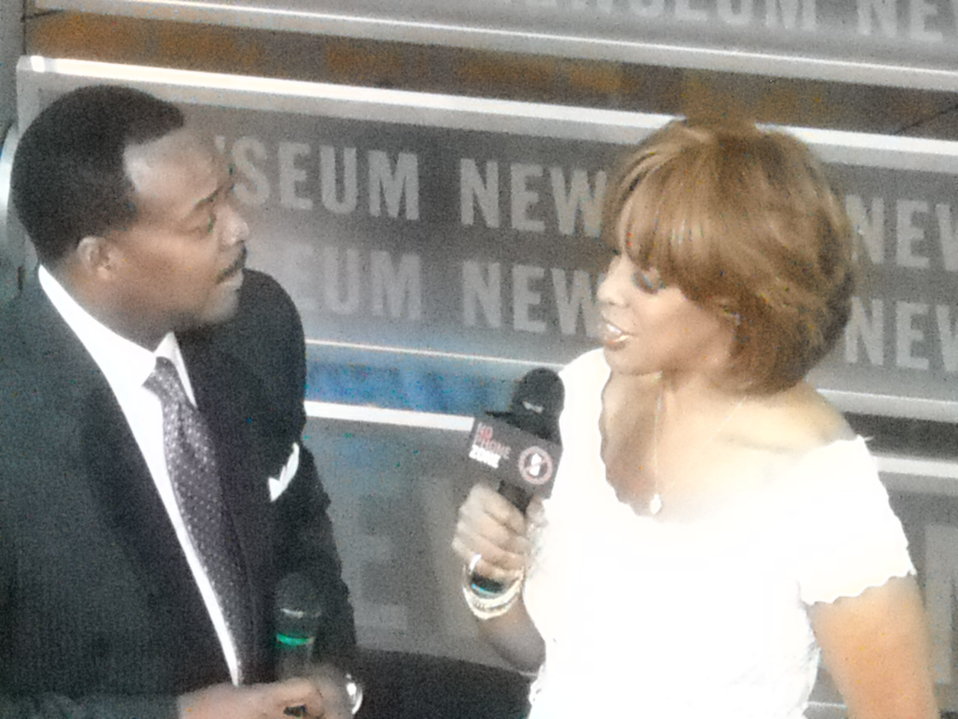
National No Phone Zone Day Newsum Washington, DC April 30, 2010 045